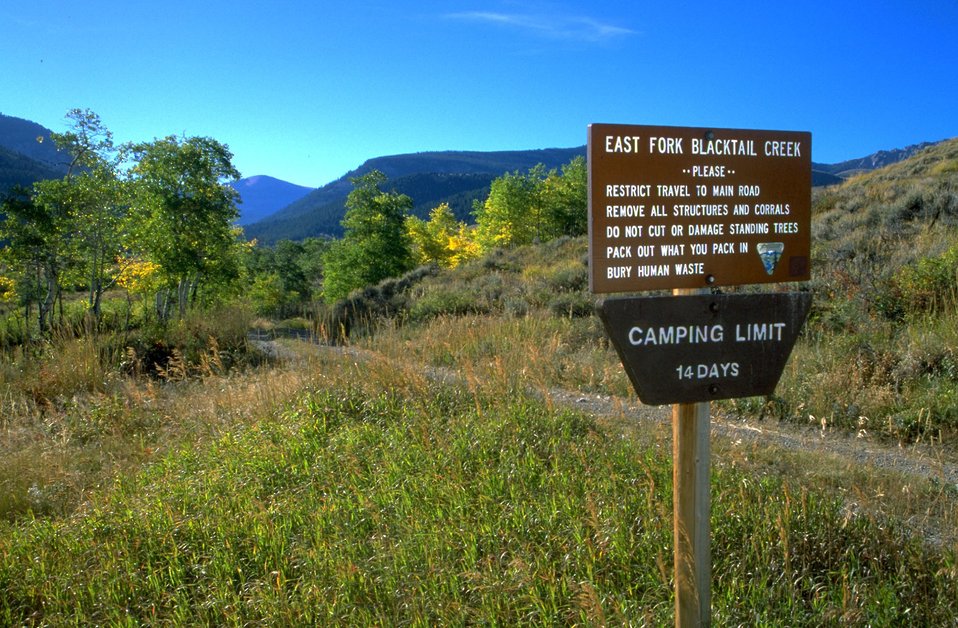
East Fork Blacktail Creek Campground sign